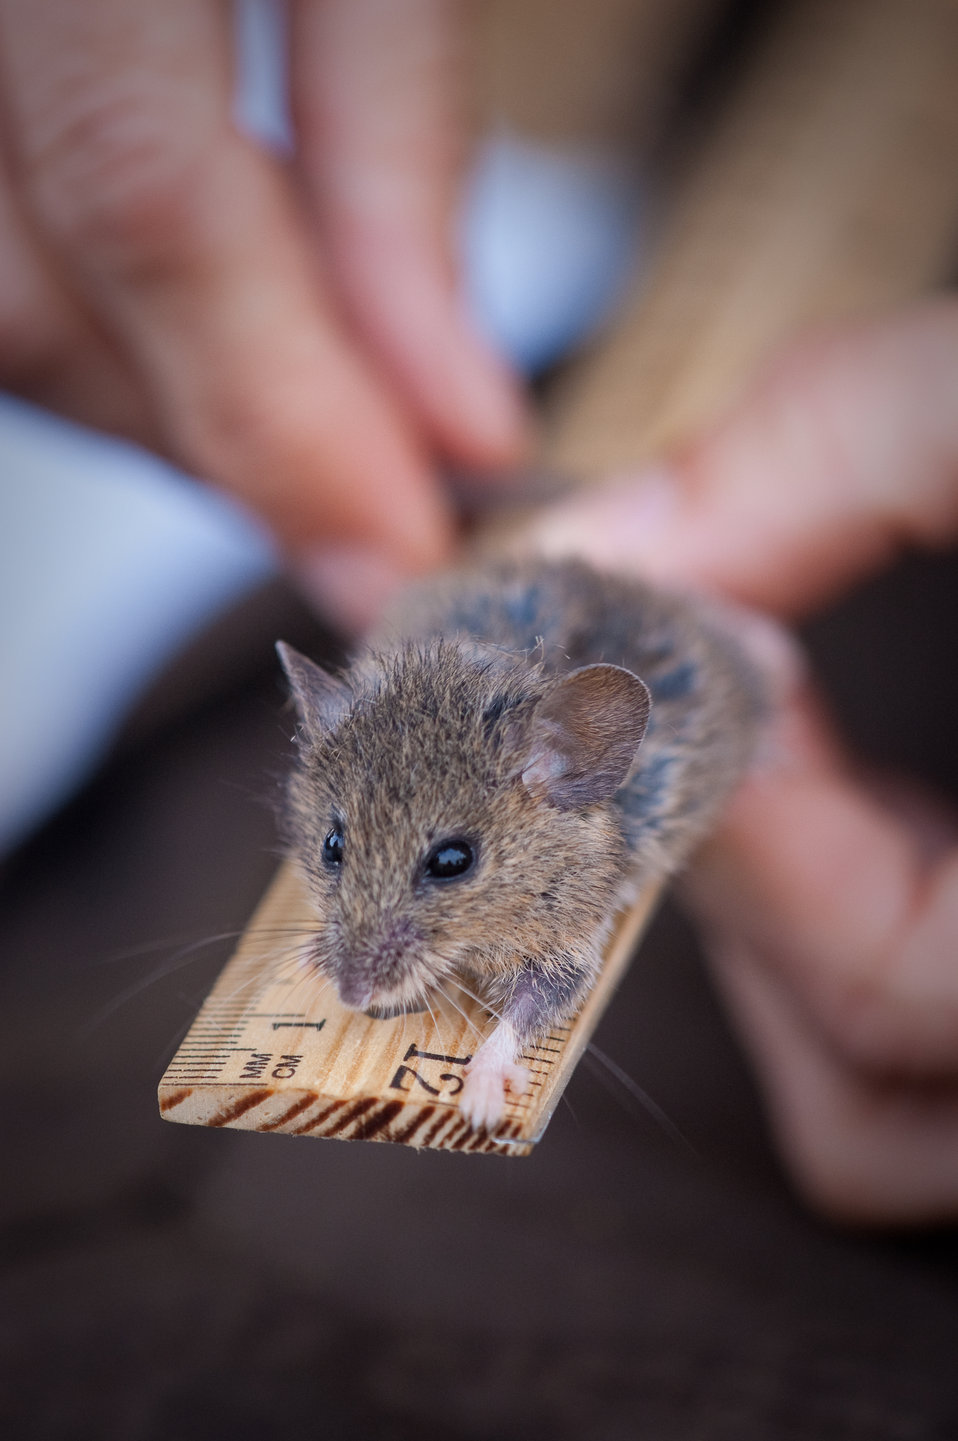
Salt marsh harvest mouse

Endangered Salt marsh harvest mice are critically dependent on dense cover and their preferred habitat is pickleweed found in tidal marshes.